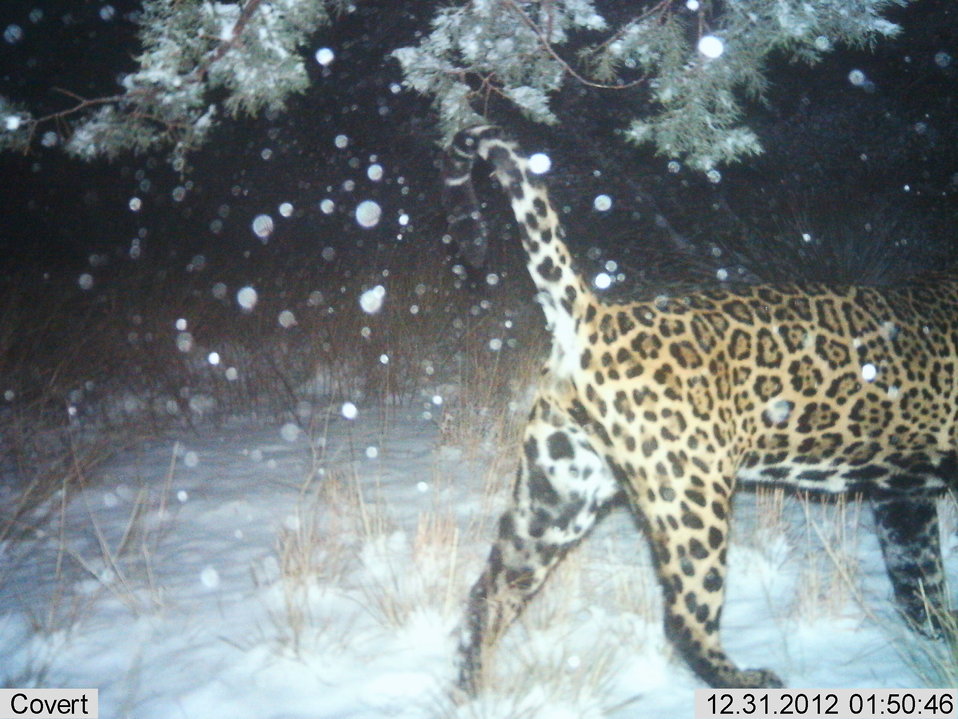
Male jaguar photographed by automatic wildlife cameras in the Santa Rita Mountains on December 31, 2012, as part of a U.S. Fish and Wildlife Service/Department of Homeland Security-funded
jaguar survey conducted by University of Arizona. One of three photos taken the same night in two different locations.